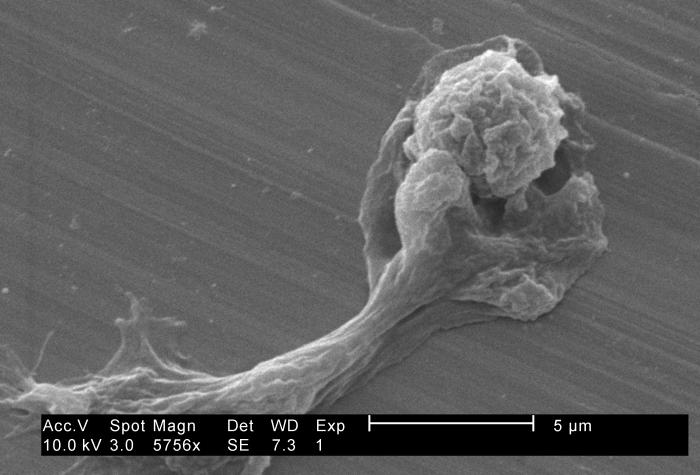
Under a moderately-high magnification of 5756X, this 2002 scanning electron micrograph (SEM) revealed some of the ultrastructural morphology exhibited by two Hartmannella vermiformis amoebae trophozoites. Note that one of the amoebae has assumed a highly distorted shape, having extruded a number of pseudopodia, as it moved across the coupon surface.